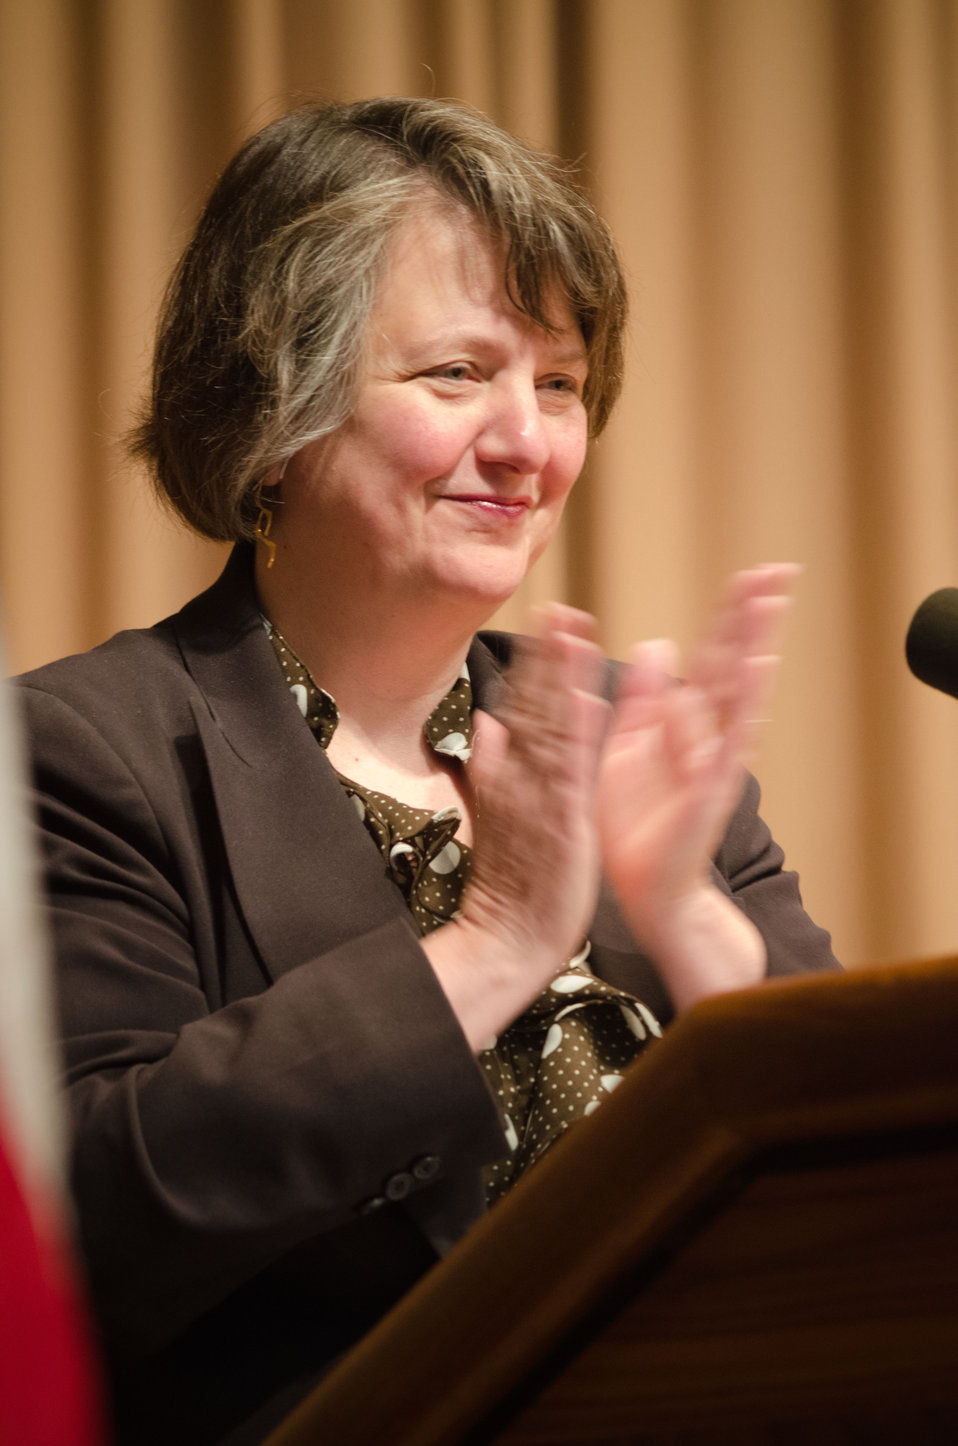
Agriculture Deputy Secretary Kathleen Merrigan offered remarks on the Agriculture’s Department diversity and inclusion and introduced guest speaker Assistant to the President and Cabinet Secretary The White House Chris Lu at the “Striving for Excellence in Leadership, Diversity and Inclusion” at the U.S. Department of Agriculture in Washington, D.C. on Thursday, May 24, 2012.